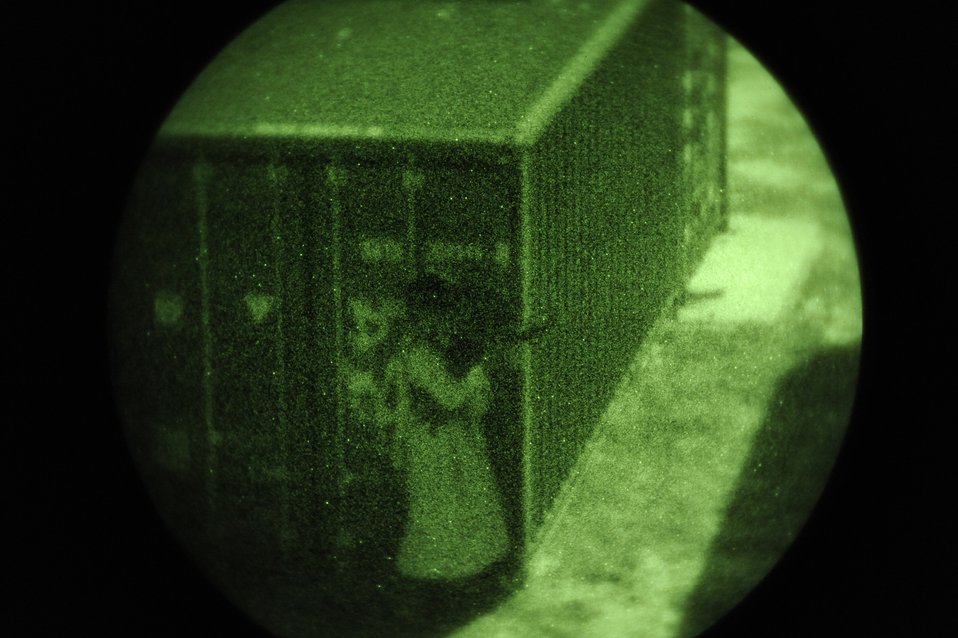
Emerald Warrior

An